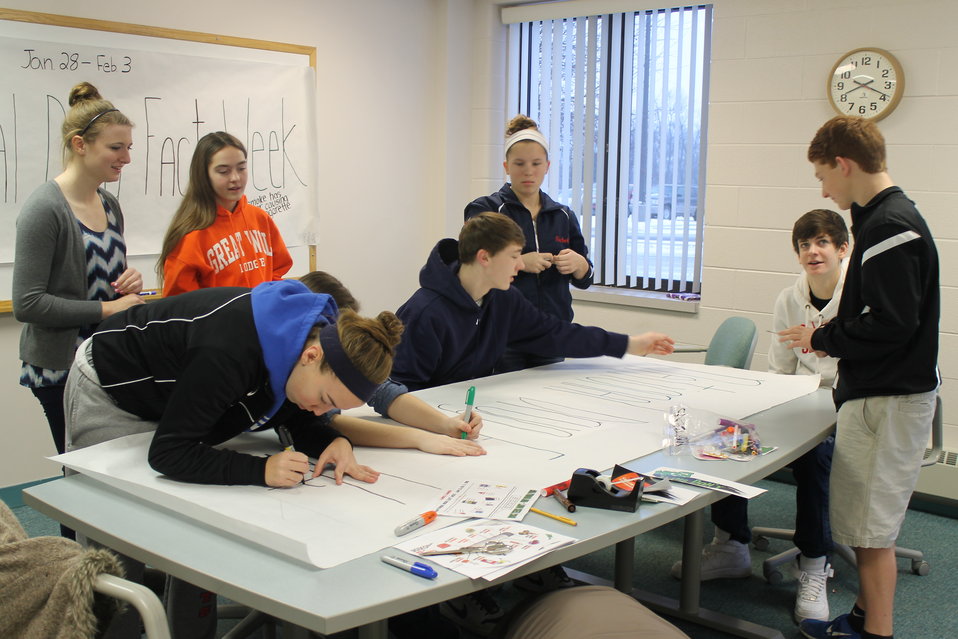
Hanover Horton, NDFW 2013

Jackson, Mich. Jackson County Substance Abuse Prevention Coalition host NDFW 2013 Events.